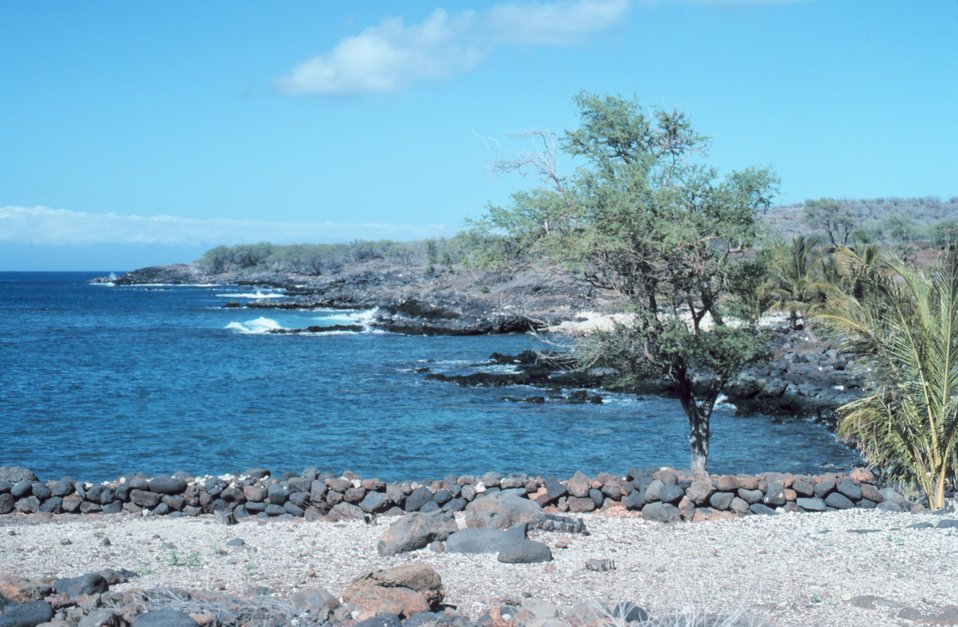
A scene along the Kona Coast